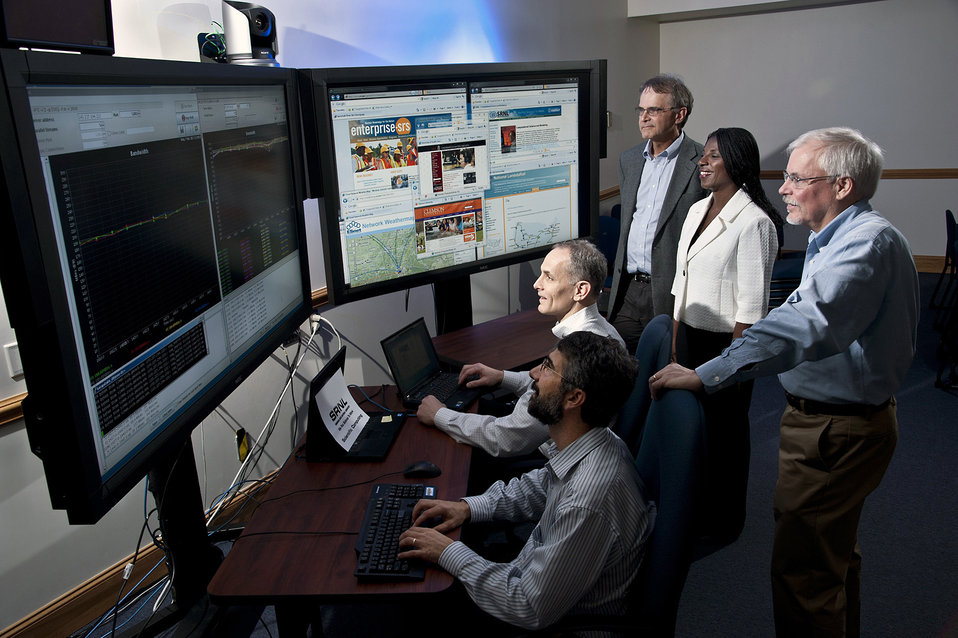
SRNS Parent Companies Provide $30M in Profits to Benefit National Laboratory and Site Operations

Savannah River Nuclear Solutions, LLC (SRNS) board of directors has provided $1.5M to enable Savannah River National Laboratory (SRNL) access to several high speed research and university computer networks, the most noteworthy being the “National Lambda Rail” (NLR), all part of a $30M commitment by SRNS’ parent companies to reinvest profits that will benefit SRNL and SRNS site operations at the Savannah River Site.
***
Team members of the SRNS and SRNL implementation team evaluate network performance of the new high speed network connection at SRS. Seated front to back: Deno Karapatakis, Scientific Computing, SRNL; Mason Richardson, Firewall Lead, Cyber Security, SRNS. Standing left to right: Dr. Phil Moore, Manager, Scientific Computing, SRNL; Barbara Key, Manager, Project Manager Office, SRNS; Bill Arnold, Network Engineer, SRNS.